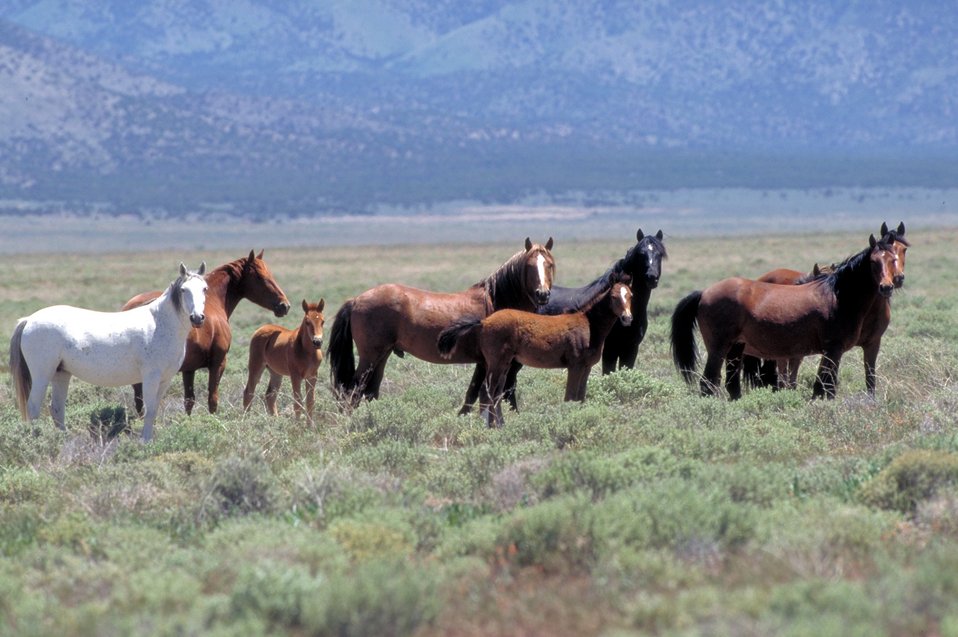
Onaqui Herd near Dugway, Utah.